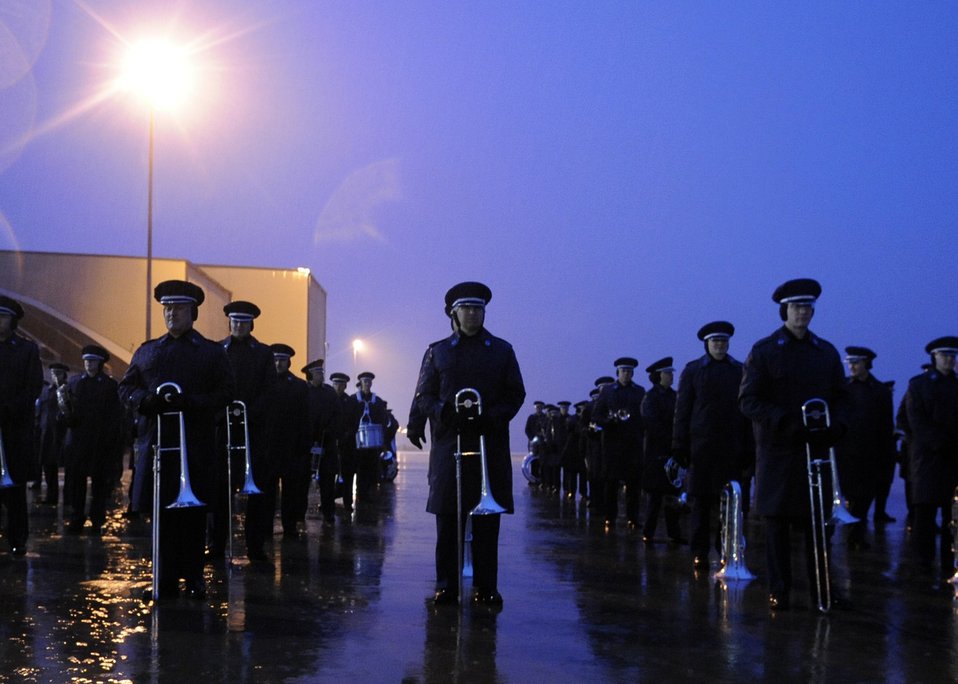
Air Force Band prepares for inauguration day

The 99-member Air Force Band practices songs while marching in the morning rain Jan. 7 at Andrews Air Force Base, Md., in preparation for the inauguration of President-elect Barack Obama.